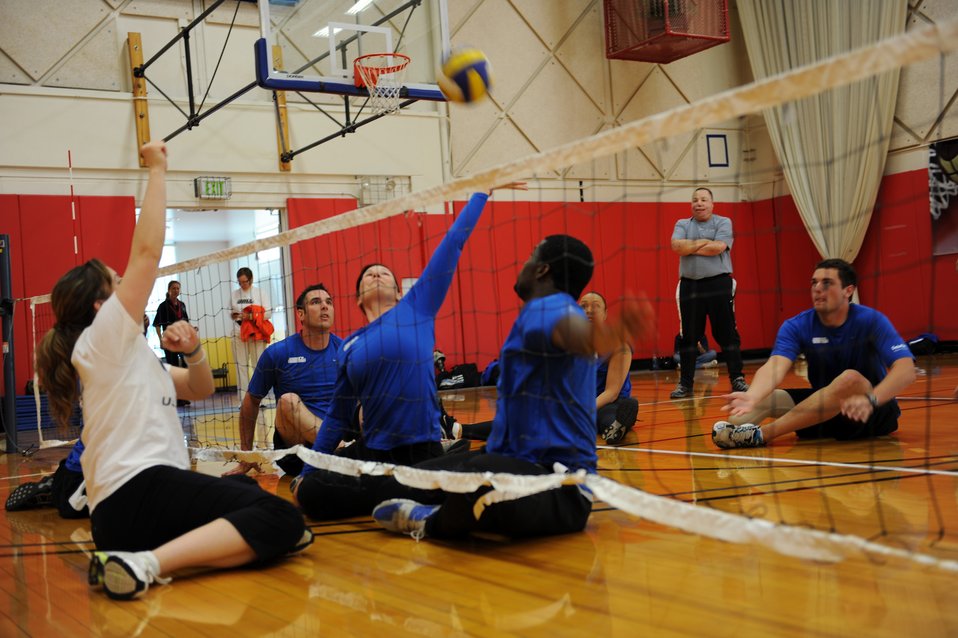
Warrior Games AF Volleyball Practice

Air Force members practice volleyball at the Warrior Games May 10, 2010 at the Olympic Training Center, Colorado Springs. The Warrior Games competition began May 10 and finishes on May 14, 2010 at the U.S. Olympic Training Center in Colorado Springs.